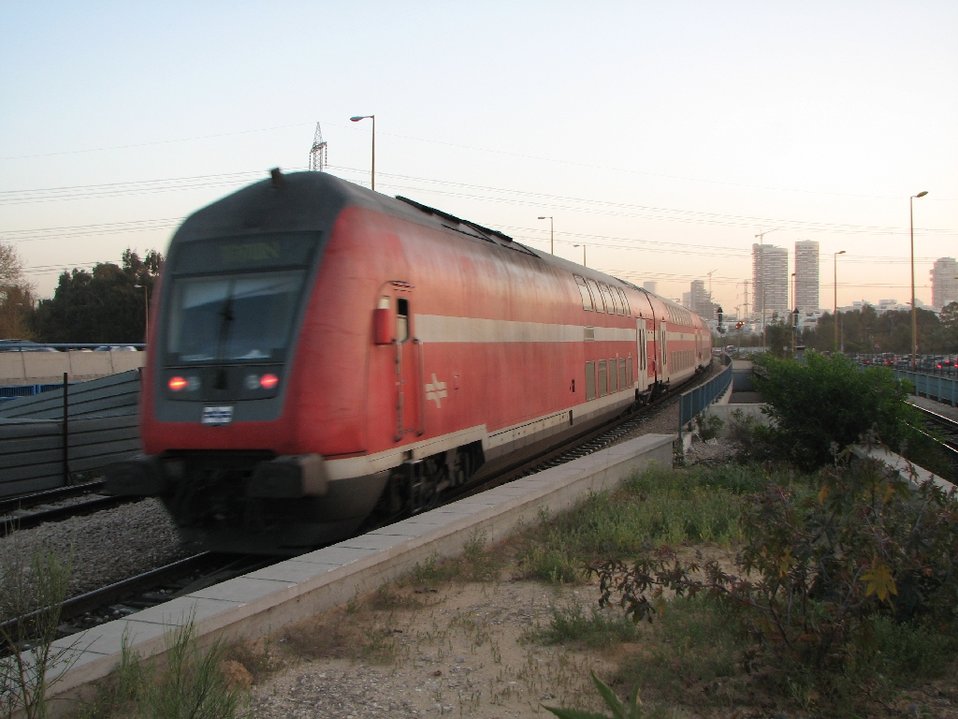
עברית: קרון ניהוג משולב עם קרון כוח וקרון נוסעים דו קומתי מתוצרת Bombardier